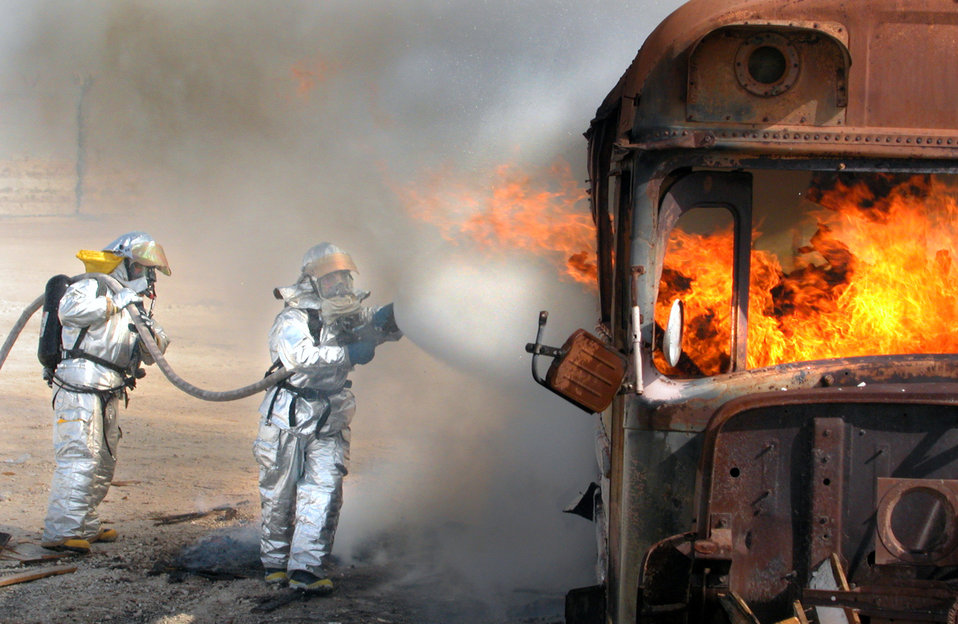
Deluge

OPERATION ENDURING FREEDOM -- Staff Sgts. Don Doose (right) and Jerry Bowling douse a training fire at a forward-deployed location in Southwest Asia. They are firefighters deployed to the 380th Expeditionary Civil Engineer Squadron. Doose is from the 934th Civil Engineer Squadron at Minneapolis-St. Paul International Airport Air Reserve Station, Minn., and Bowling is from the 94th Civil Engineer Squadron at Dobbins Air Reserve Base, Ga.